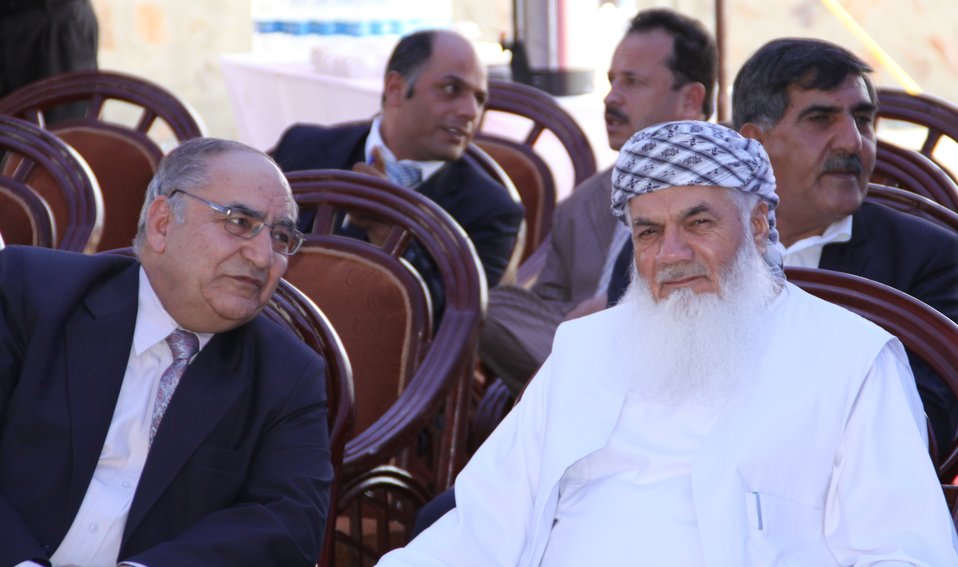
105 MW Tarakhil Power Plant Handover